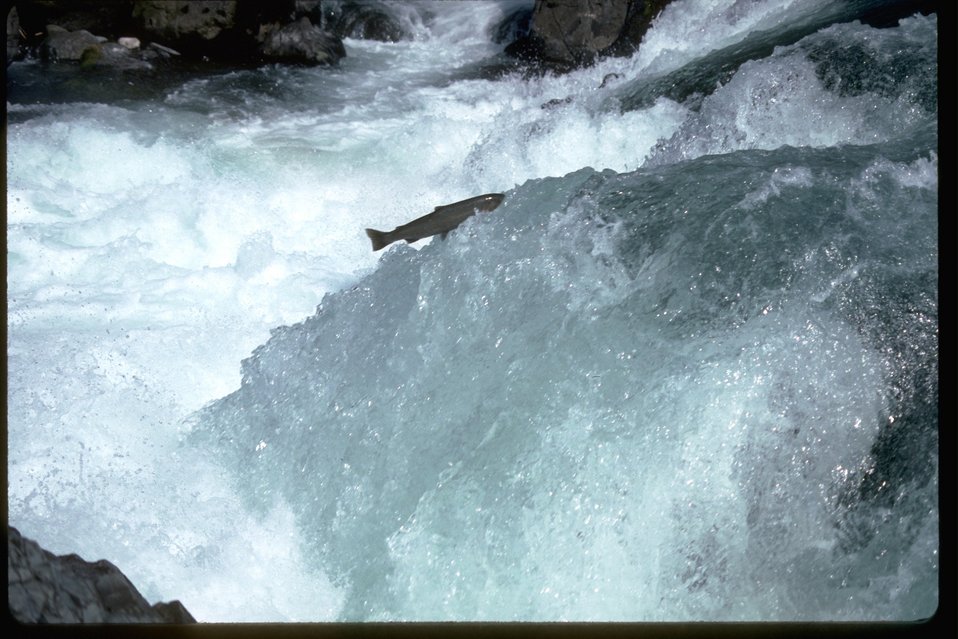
Salmon or Steelhead jumping up falls.